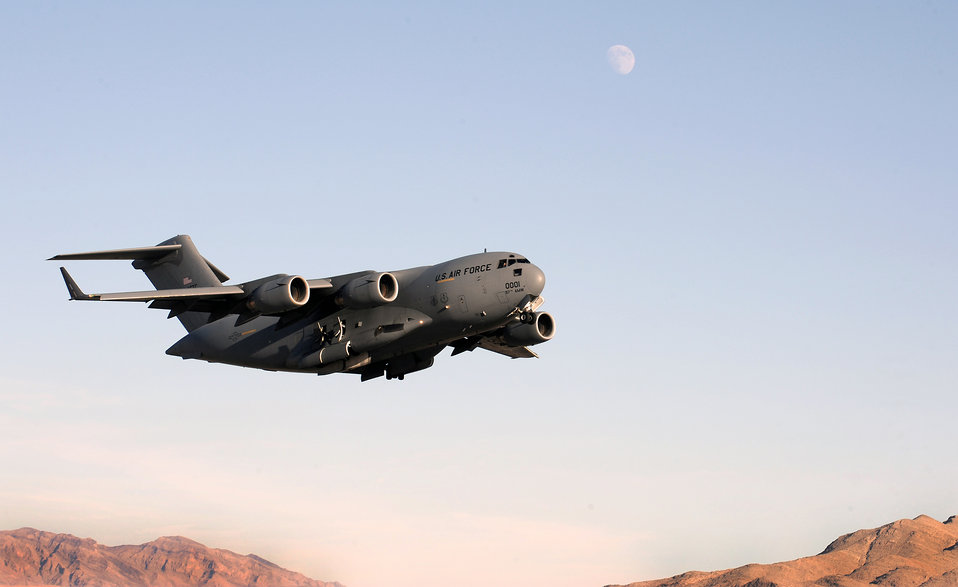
Desert takeoff

A C-17 Globemaster III departs from Nellis Air Force Base, Nev., during the Mobility Air Forces Exercise held over the Nevada Test and Training Range, Nov. 17, 2010.